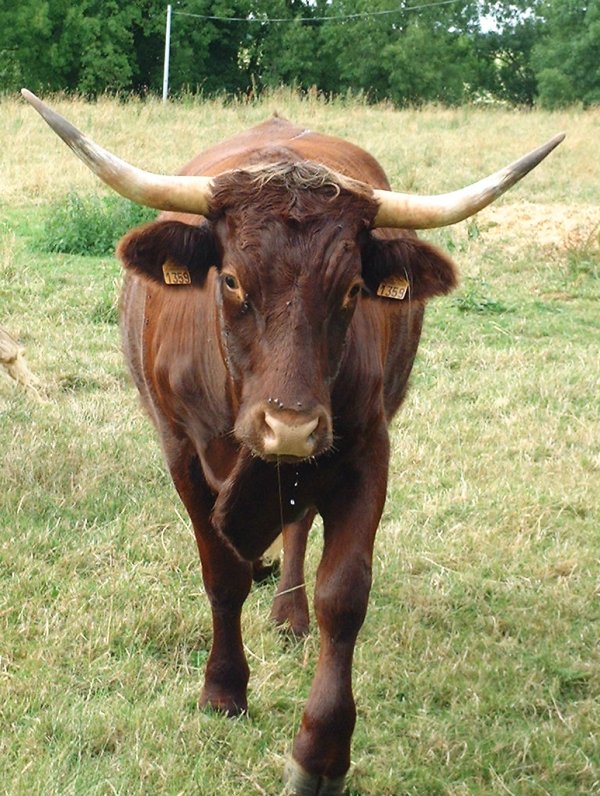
Fran√ßais†: Vache de race salers au p√¢turage.